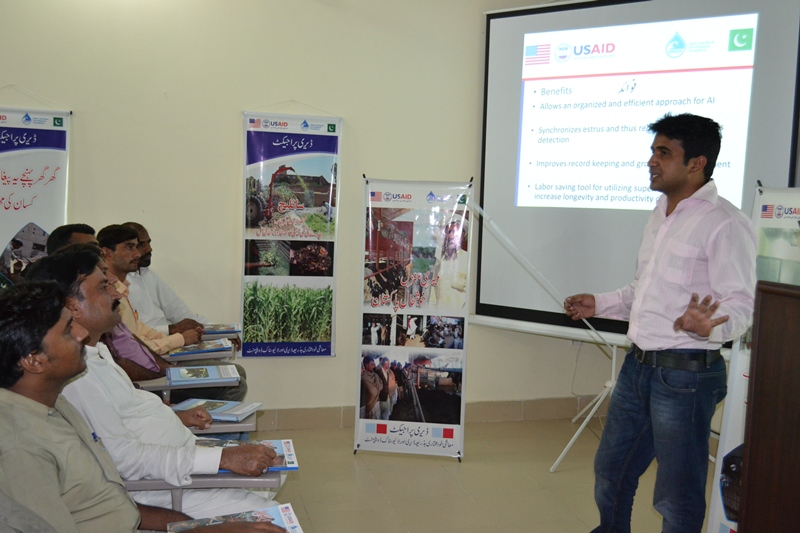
1 - First batch of Dairy Project farm manager trainees attending Farm Managers Training by USAId Dairy Project